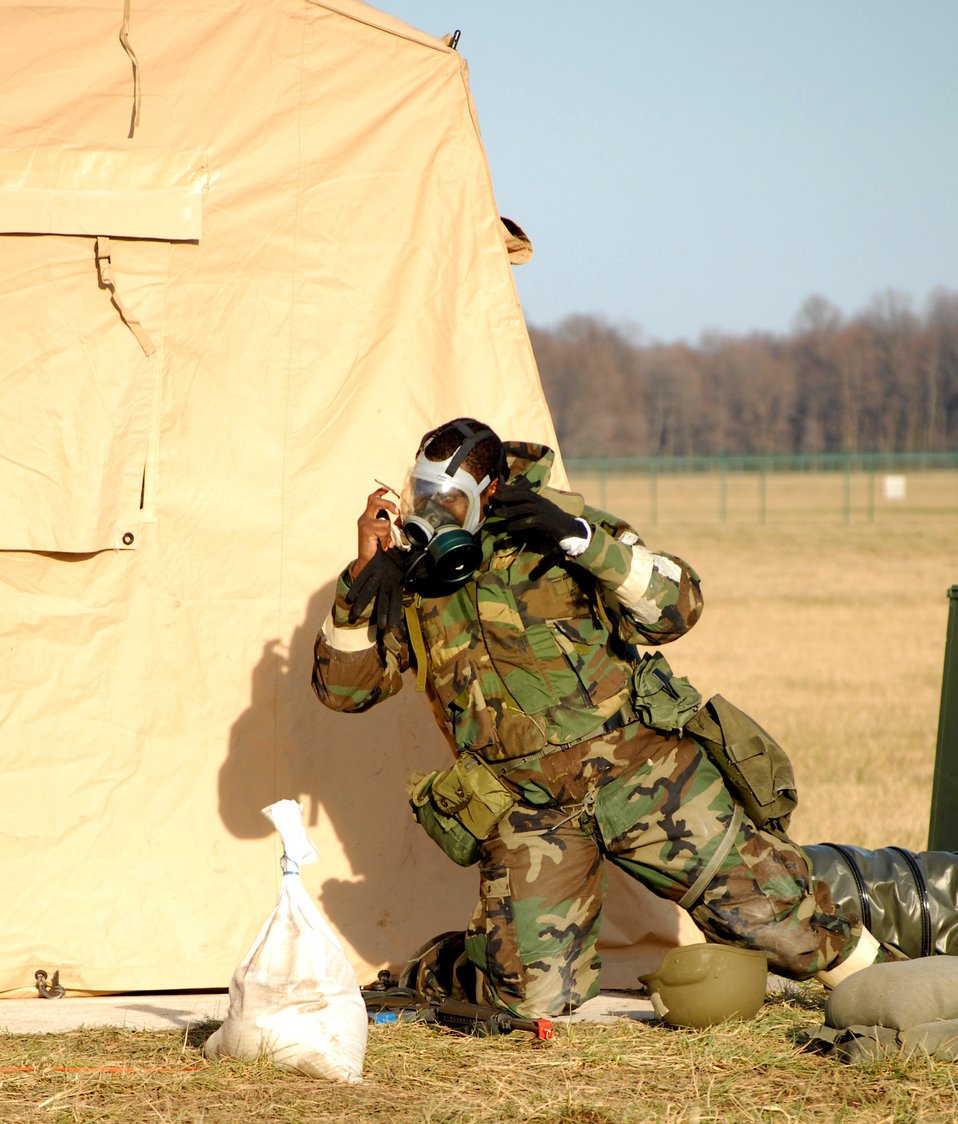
Dover exercise tests Airmen's combat environment skills

Staff Sgt. Martin Davis removes his gas mask during Exercise Haunted House Battle Ax Jan. 7 at Dover Air Force Base, Del. During the exercise, alarm conditions varied, which permitted Sergeant Davis to remove some of his protection. Sergeant Davis is assigned to the 436th Services Squadron.